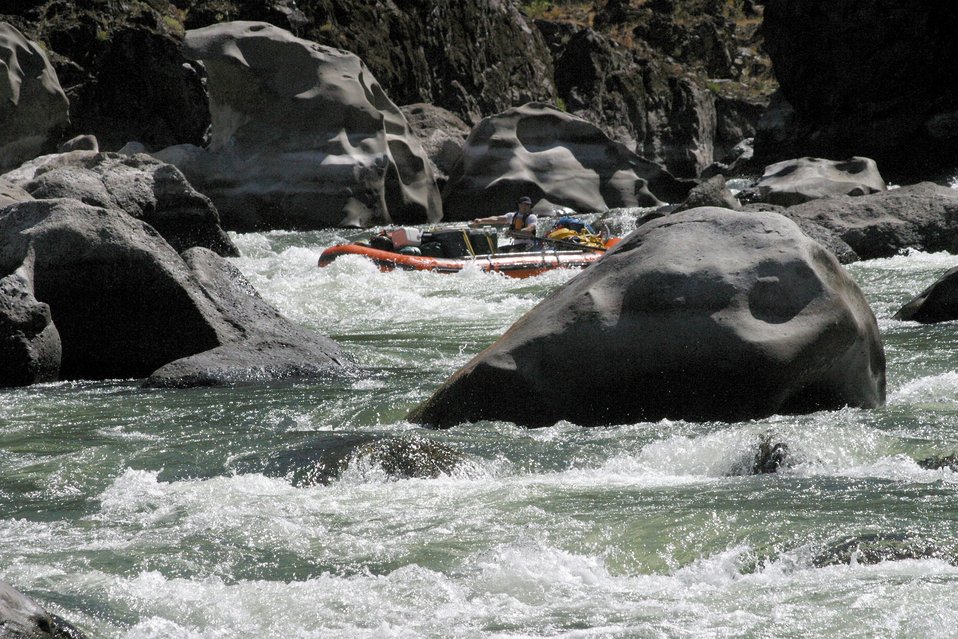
Boaters negotiate Blossom Rapids.